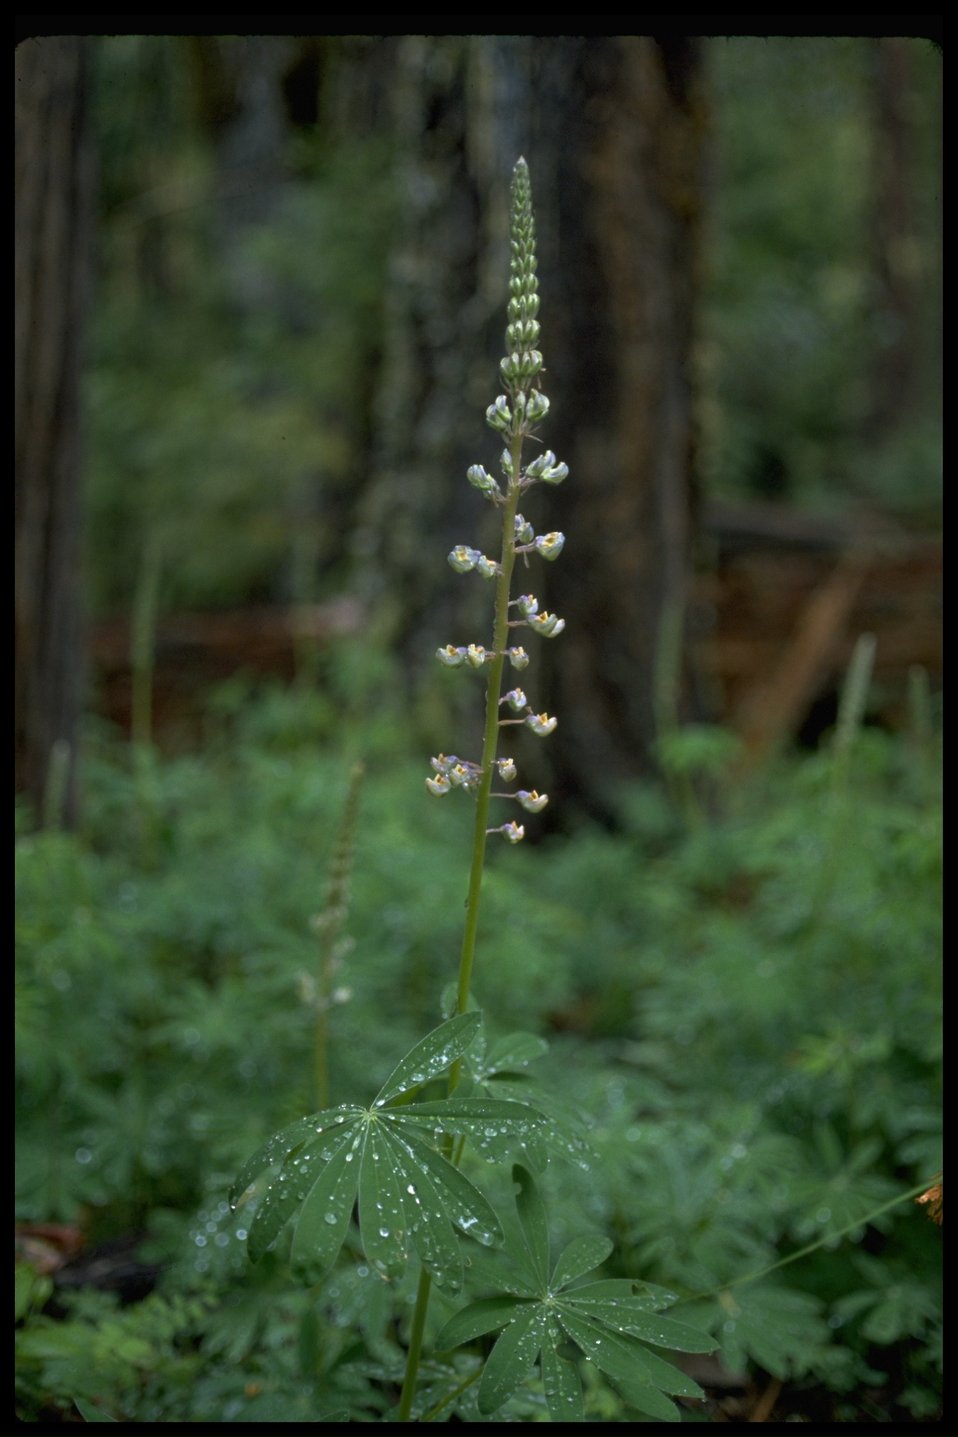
Lupinus sulphureus ssp. kincaidii, or commonly known as Kincaid's Lupine.